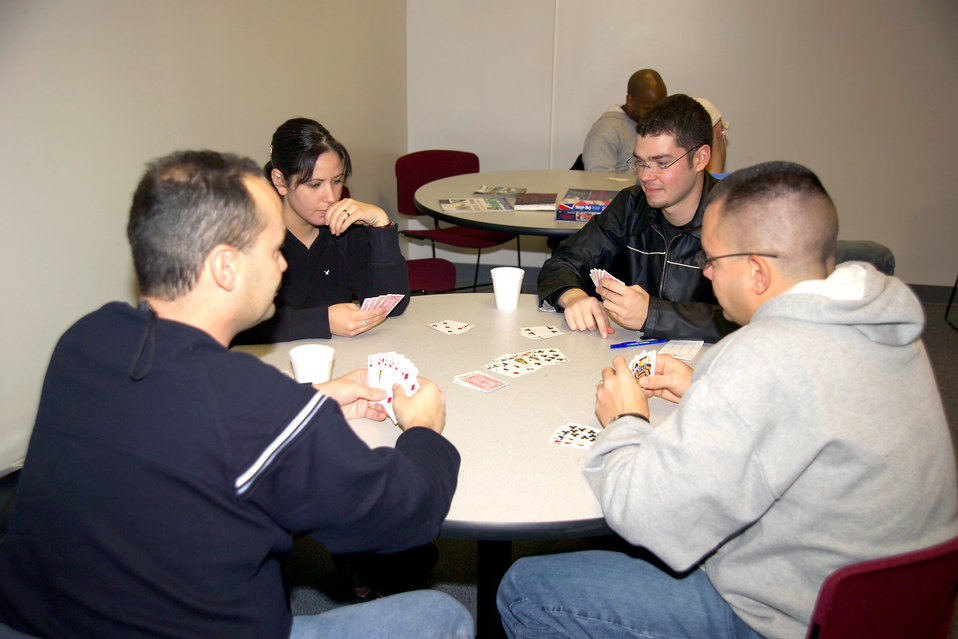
New mobility concept tested at Whiteman

WHITEMAN AIR FORCE BASE, Mo. -- Airmen from F.E. Warren Air Force Base, Wyo., play cards to pass the time while waiting for transportation at the deployment center here. Airmen also had the opportunity to watch television and eat at the deployment center before boarding planes to go to locations in Southwest Asia.